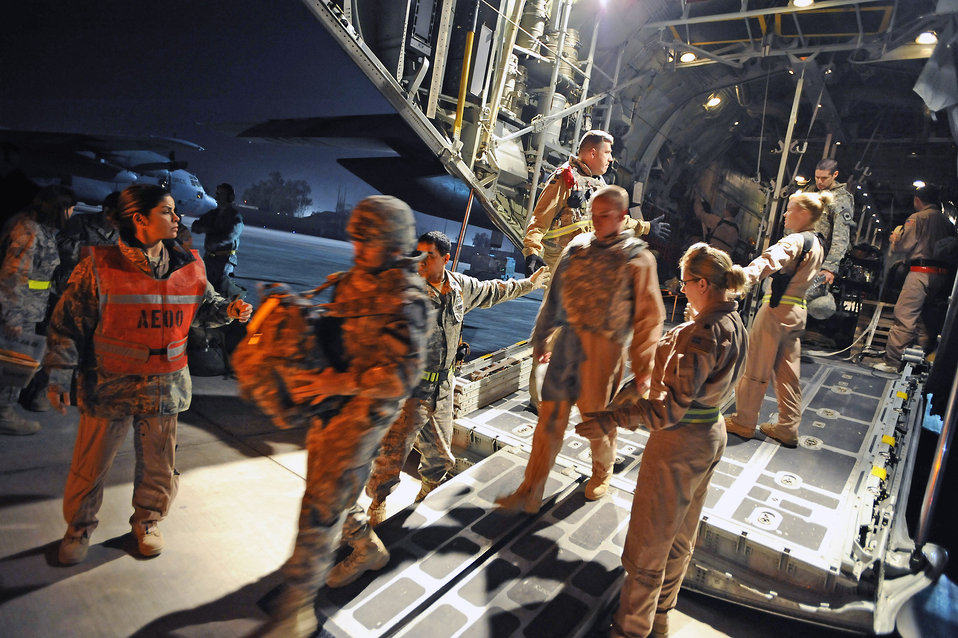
Iraqi doctors study American aeromedical evacuation program

Ambulatory patients depart a C-130 Hercules assigned to the 777th Expeditionary Airlift Squadron at Joint Base Balad, Iraq, Nov. 8. Two Iraqi doctors from Iraq's Ministry of Defense accompanied an aeromedical evacuation mission to study Air Force aeromedical evacuation procedures so that they can establish an aeromedical evacuation service for the Iraqi air force.